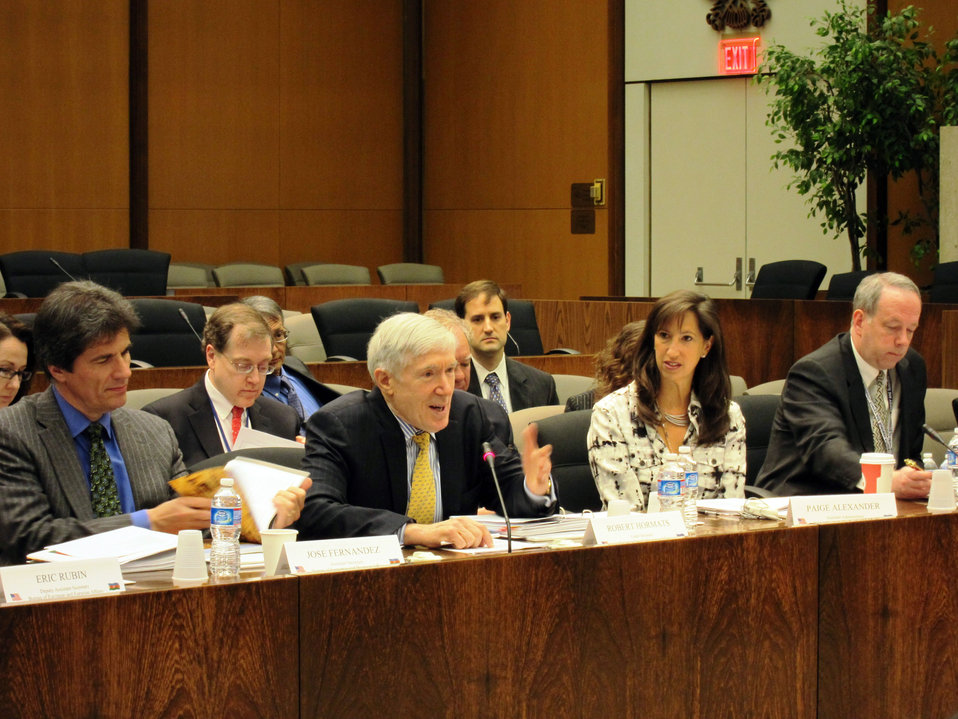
Under Secretary Hormats hosts the U.S. – Azerbaijan Economic Partnership Commission Dialogue

From left to right, Assistant Secretary of State for Economic and Business Affairs Jose W. Fernandez, Under Secretary for Economic Growth, Energy, and the Environment Robert D. Hormats, USAID Assistant Administrator for the Bureau for Europe and Eurasia Paige Alexander; and Wendell Albright, Director, Office of Aviation Negotiations; discuss opportunities for further economic and commercial cooperation at the U.S.-Azerbaijan Economic Partnership Commission on April 18, 2012, in Washington, D.C.